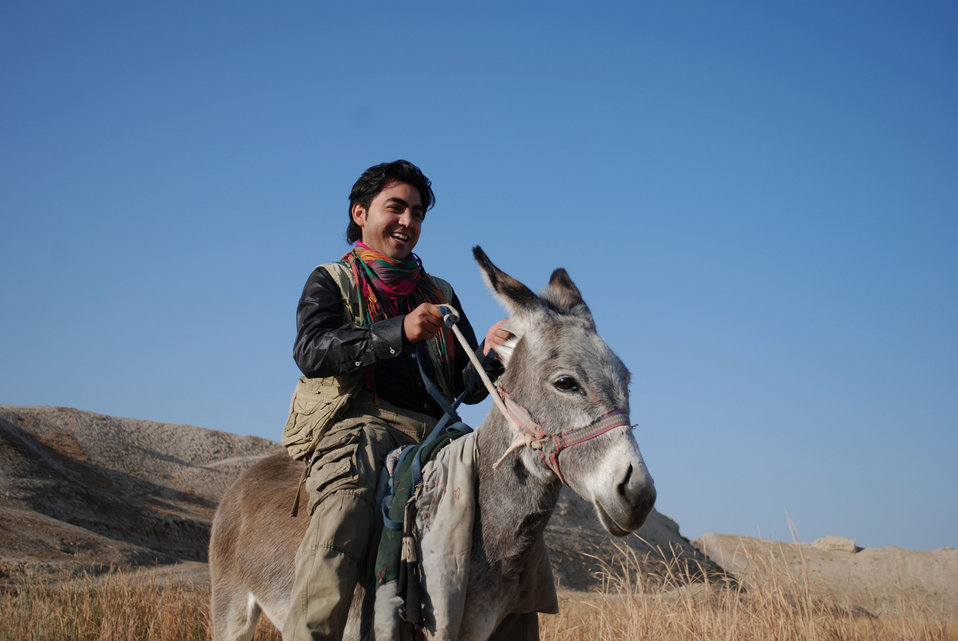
'On the Road' in Balkh Province